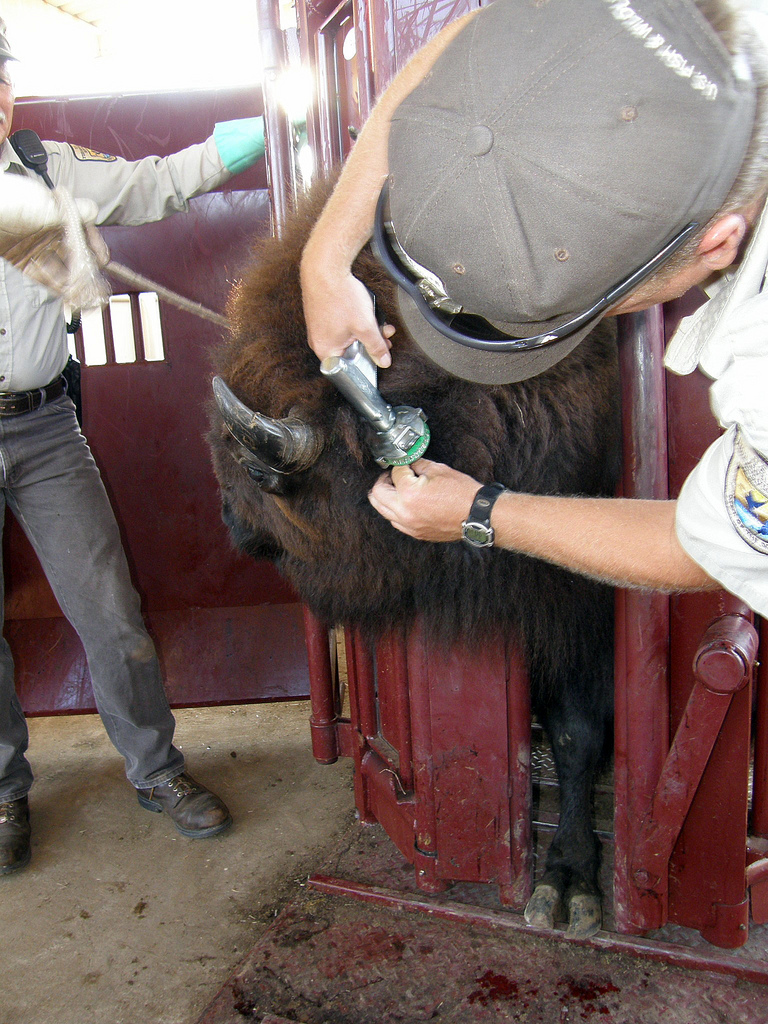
Wichita Mountains National Wildlife Refuge, OK

A biologist microchips a bison with a record of its genetic information during the annual roundup.